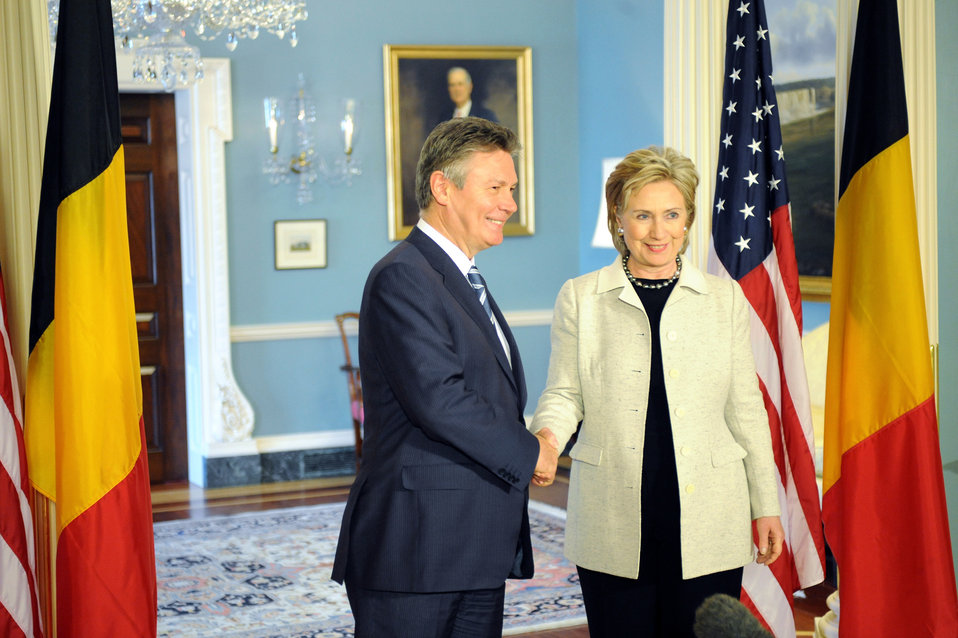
Secretary Clinton Meets With Belgian Prime Minister

U.S. Secretary of State Hillary Rodham Clinton hosts a bilateral meeting with Belgian Deputy Prime Minister Karel De Gucht in the Treaty Room of the U.S. Department of State in Washington, DC May 22, 2009.